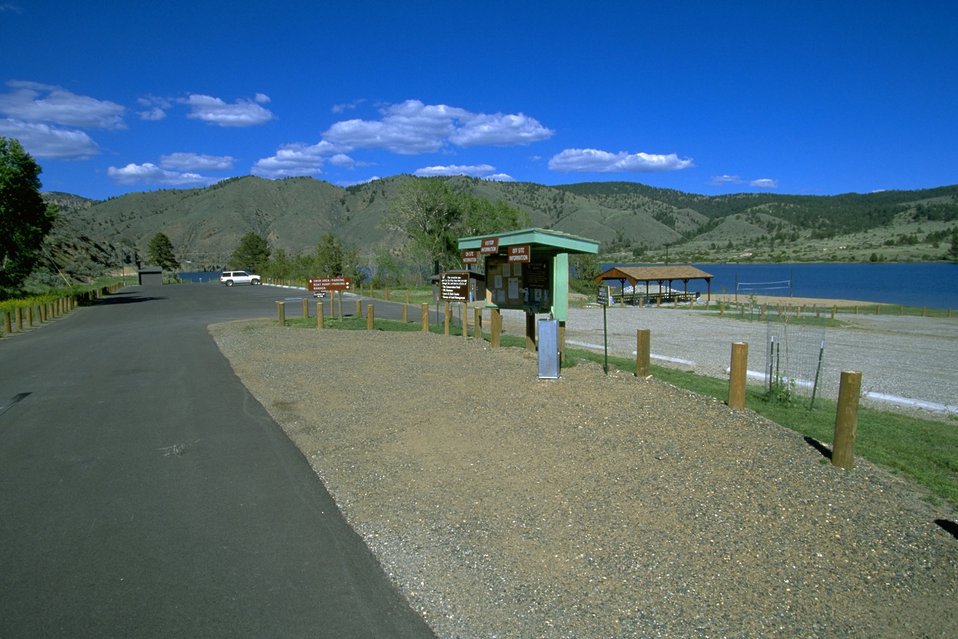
Parking Area and Kiosk at the Clark's Bay Day Use Area by Hauser Lake